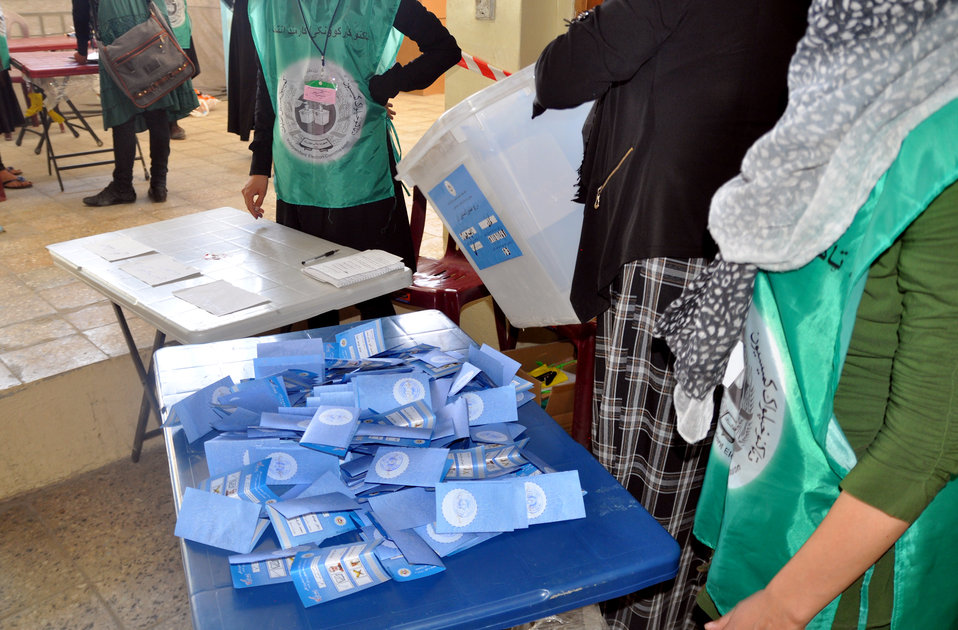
IEC workers count ballots in Kabul.